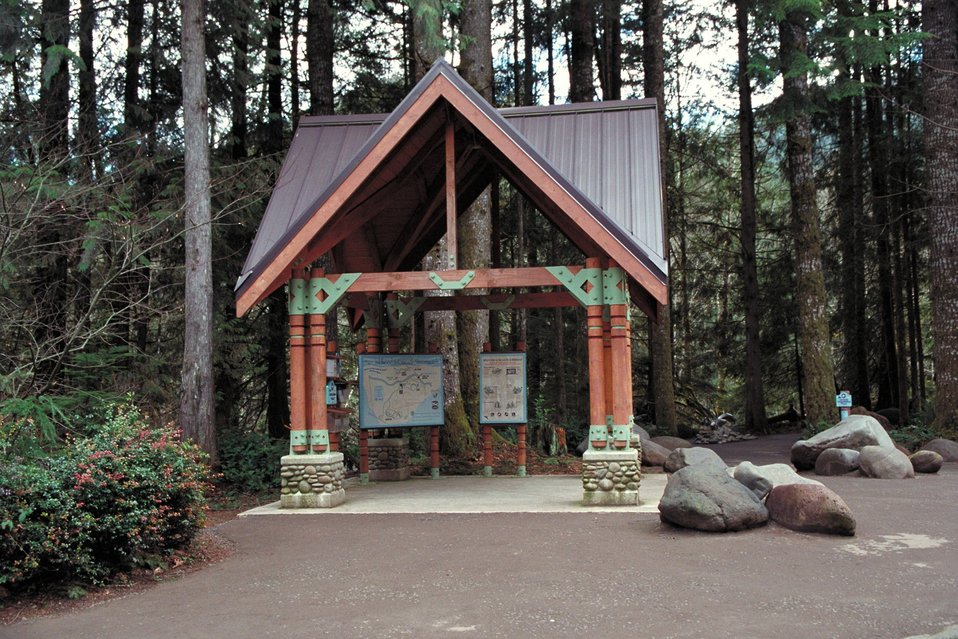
Cascade Stream Watch is an environmental education program conducted at BLM's Wildwood Recreation site.